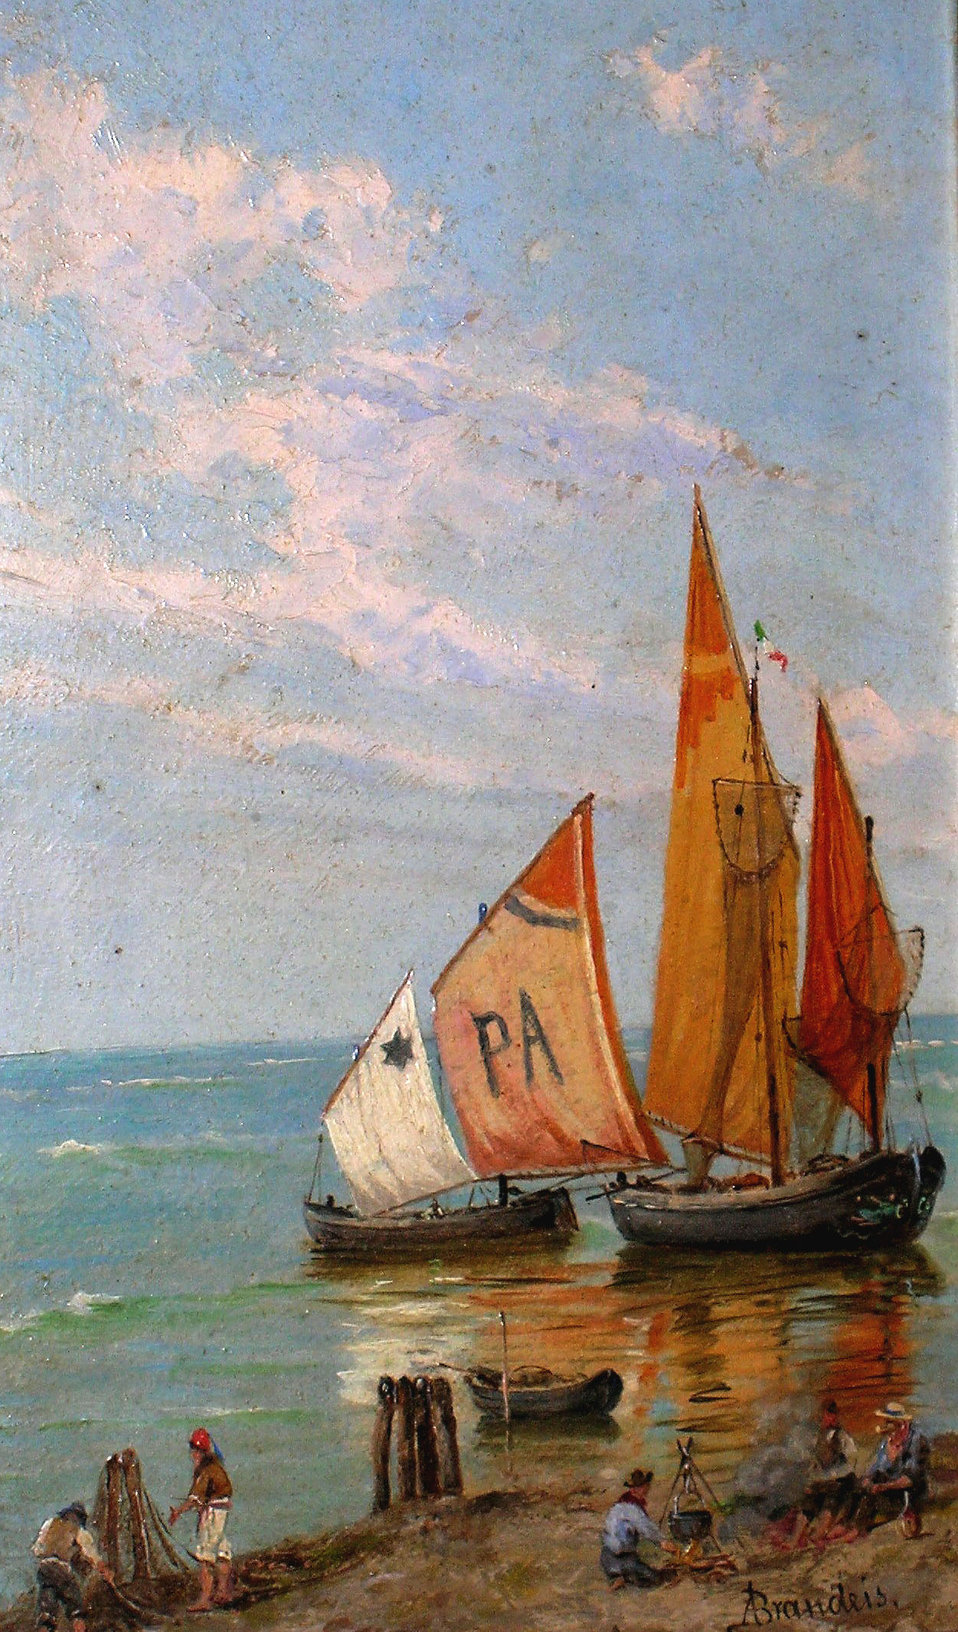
BrandeisA2